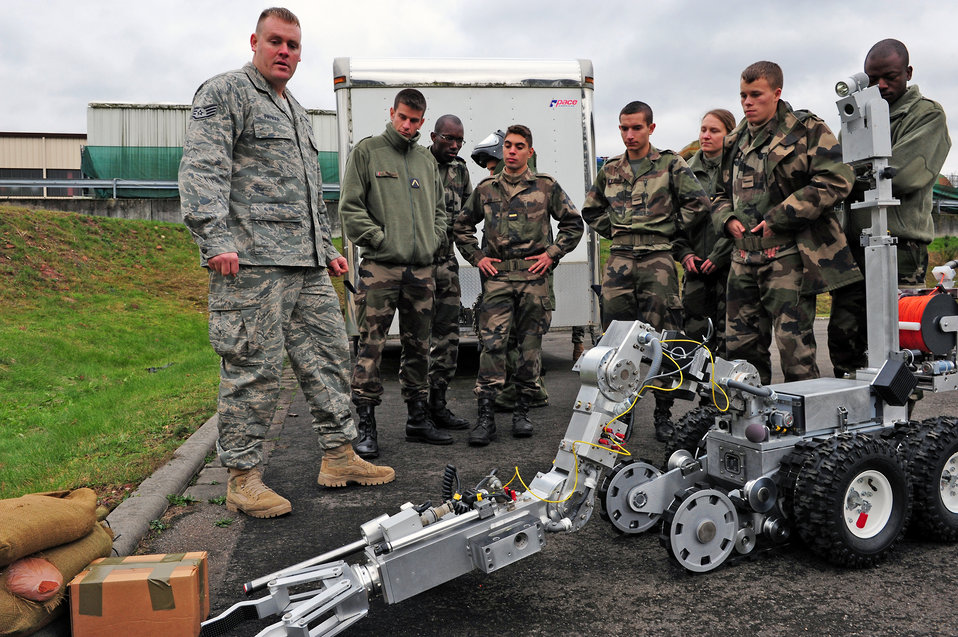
Building Partnerships Continues on Ramstein PB

Staff Sgt. Kristopher Parker briefs French air force cadets on particulars of the F6A robot, Nov. 16, 2010 at Ramstein Air Base, Germany. The cadets visited several locations on base during the tour. Sergeant Parker is with the 886th Civil Engineer Squadron there.